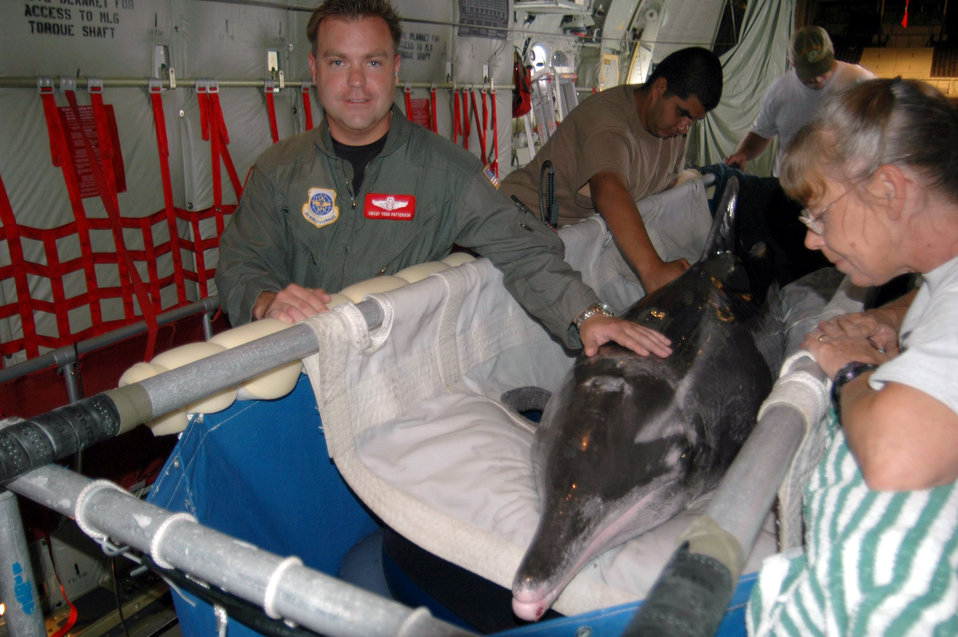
Reservists airlift dolphin to Florida

CORPUS CHRISTI, Texas -- Senior Master Sgt. Todd Patterson and Lea Walker (right) spend time with Noah, a rescued dolphin, on a C-130J Hercules en route to Florida. Aircrew with the 815th Airlift Squadron from Keesler Air Force Base, Miss., helped volunteers keep Noah hydrated and comfortable during the three-hour flight. Ms. Walker is the regional director of the Texas Marine Mammal Standing Network.